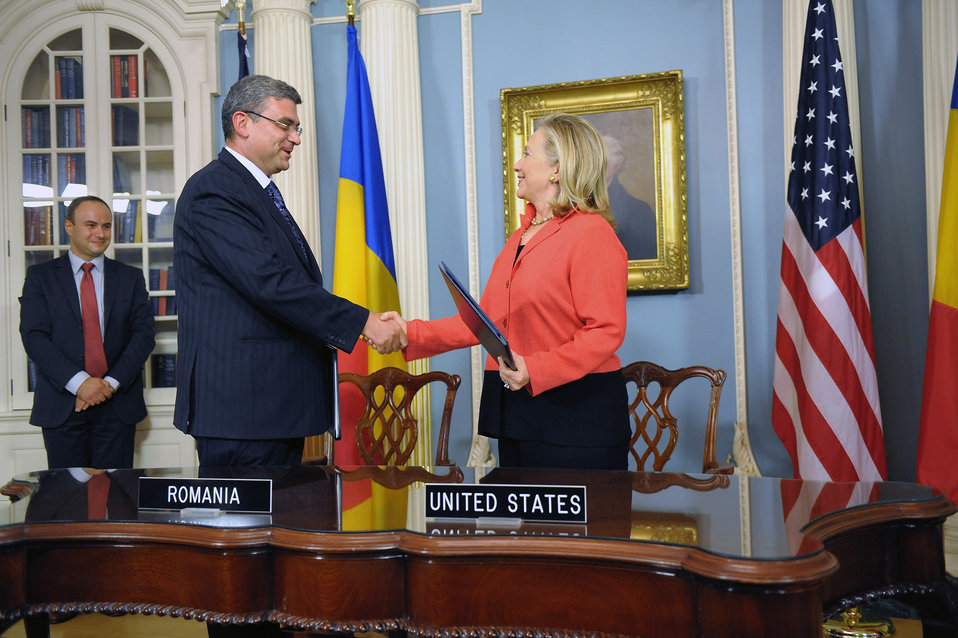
Secretary Clinton Shakes Hands With Romanian Foreign Minister Baconschi

U.S. Secretary of State Hillary Rodham Clinton shakes hands with Romanian Foreign Minister Teodor Baconschi after the signing of the Ballistic Missile Defense Agreement, in the Treaty Room at the U.S. Department of State in Washington, D.C., on September 13, 2011.